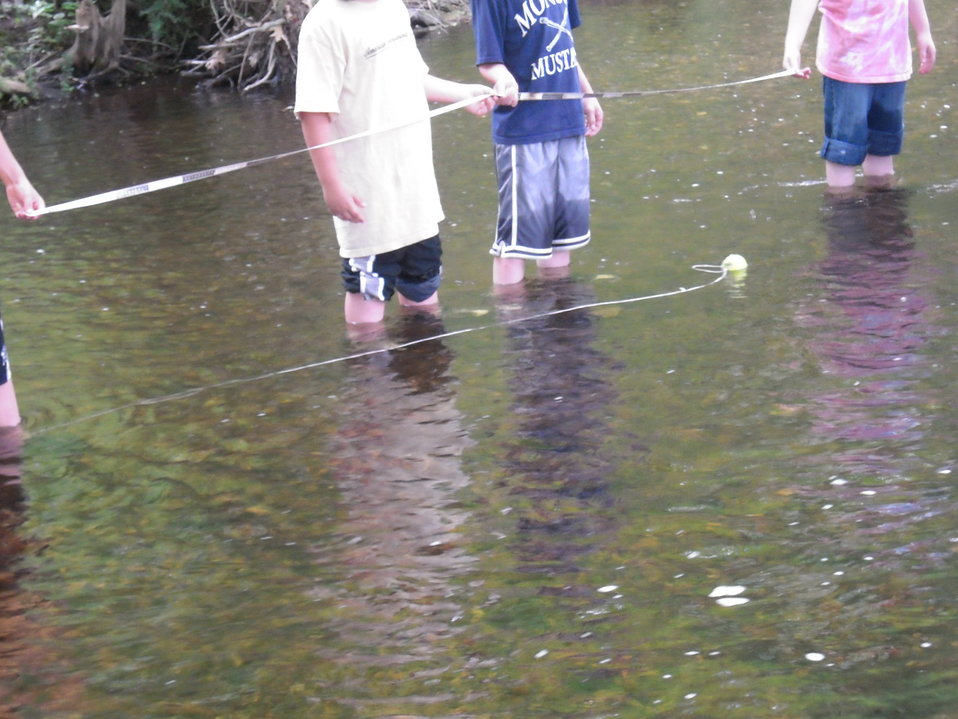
Creative way to time water flow